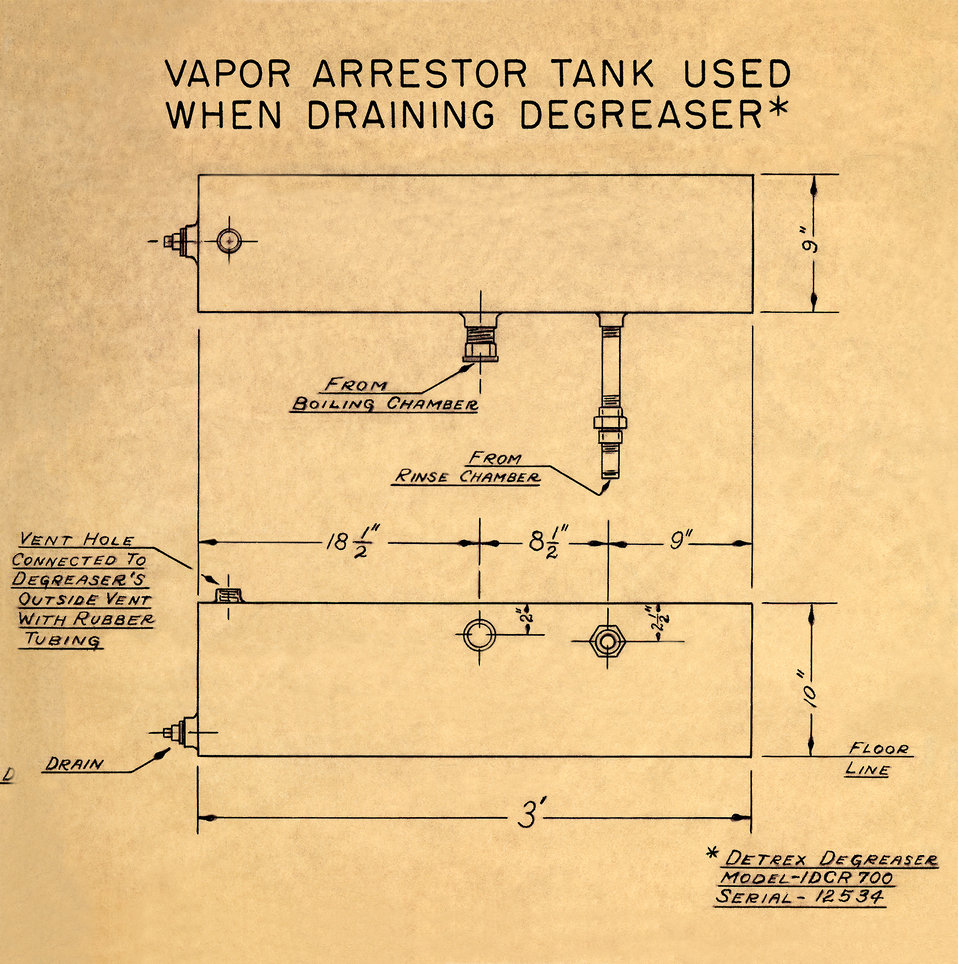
This 1952 drawing depicted an historical drawing provided by the Center for Disease Control's (CDC), National Institute for Occupational Safety and Health (NIOSH), detailing the design of a Detrex Degreaser�, Model IDCR-700, which was used to remove grease from 'coil steel', introduced during the manufacture process. The grease, used as a rust prevention measure, must be removed before parts are painted and assembled. The machine used to degrease the parts consists of a large, square vat with electrical coils on the bottom. The tank was filled with liquid trichloroethane, a halogenated hydrocarbon (HHC), which was heated, creating a vapor that removed grease from suspended steel parts. HHCs are a cardiovascular, or blood toxicant. In the 1940s and 1950s, the Industrial Hygiene Division (IHD) investigated hazards associated with many types of manufacturing activities. This design was an example of a measure meant to improve workplace safety by keeping vapors from escaping.